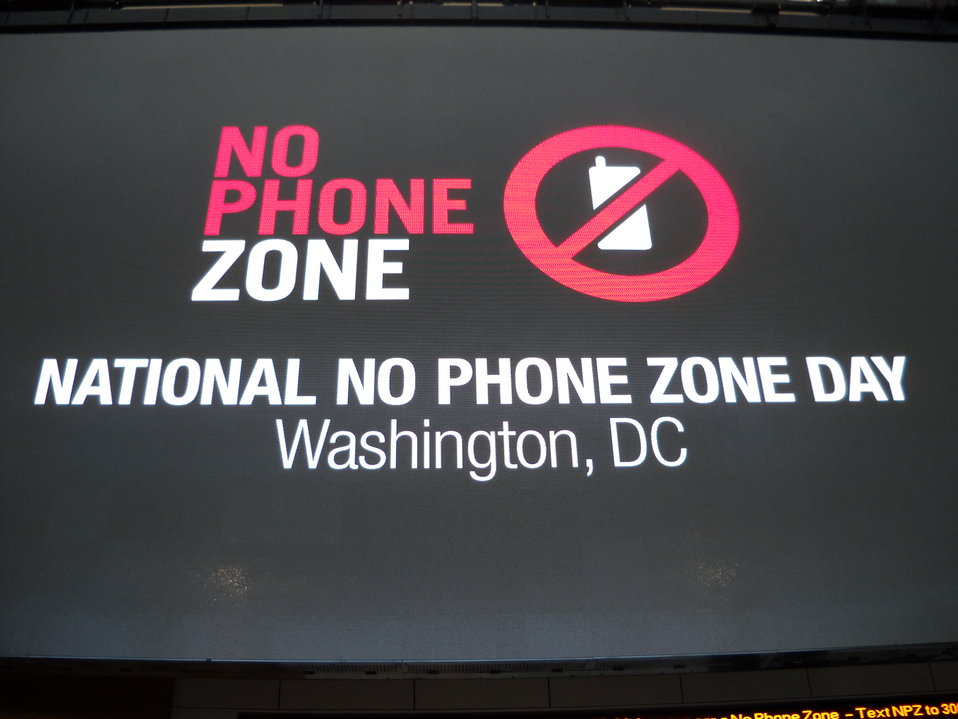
National No Phone Zone Day Newsum Washington, DC April 30, 2010 009